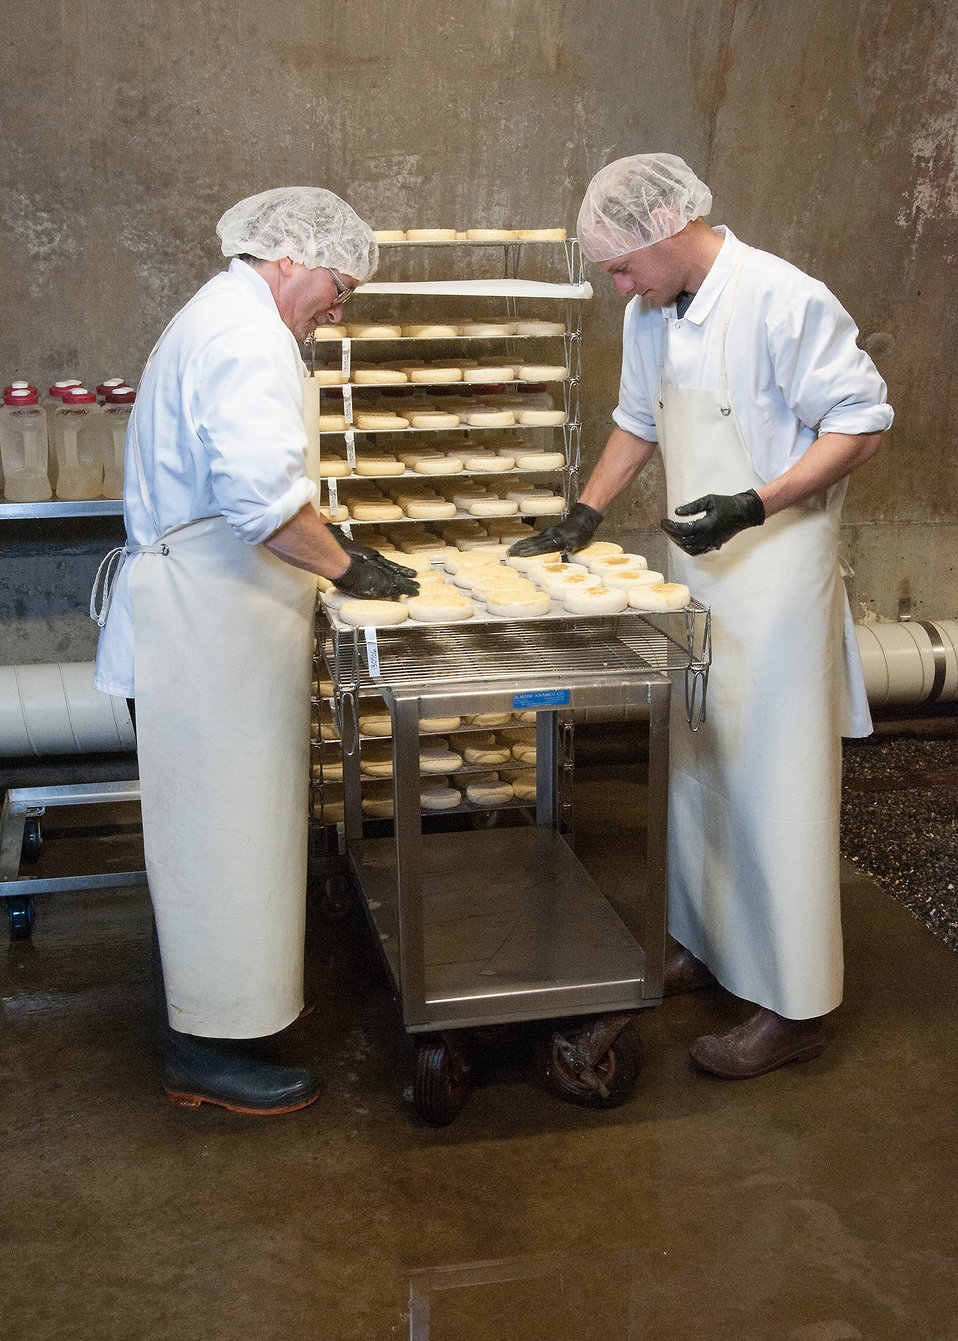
Willoughby cheese developed at The Cellars at Jasper Hill in Greensboro, VT is a thin; tacky rind cheese with a lightly pungent, savory base with ripe-peach and cream flavors. The soft, edible rind is mild and complimentary in texture to the smooth interior. The cheese is washed with hard apple cider. The Cellars at Jasper Hill, an innovative 22,000 square foot underground facility consisting of seven ageing caves received a U. S. Department of Agriculture (USDA) Rural Development (RD) Business and Industry Guaranteed (BIG) Loan. This loan was used to construct state-of-the-art artesian cheese aging cave facility to support expanded on-farm value-added cheese production as well as contract aging for other local cheese makers so they may access the growing market for artisan cheese nationwide on Sep. 19, 2013.